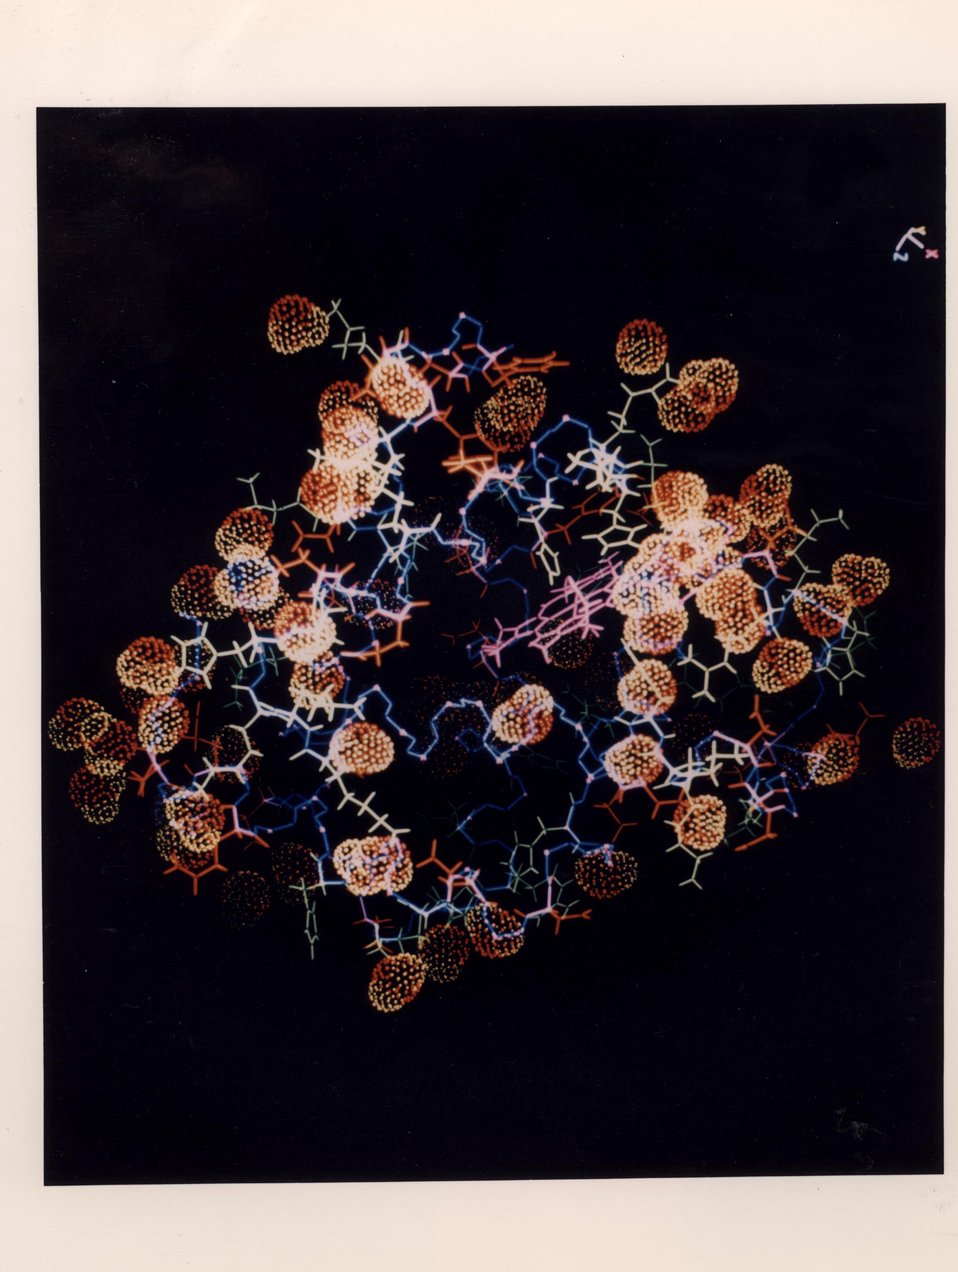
The power of neutron diffraction in detecting hydrogen atoms, and thus determining the positions of hydrating water molecules, is shown in this image of hydrated carbon monoxide myoglobin. The protein is depicted as a stick model, whereas the water molecules are shown as space-filling stippled structures. Note that the access route (center of picture) to the CO binding site on the pinkish-colored heme group is unobstructed by water molecules.